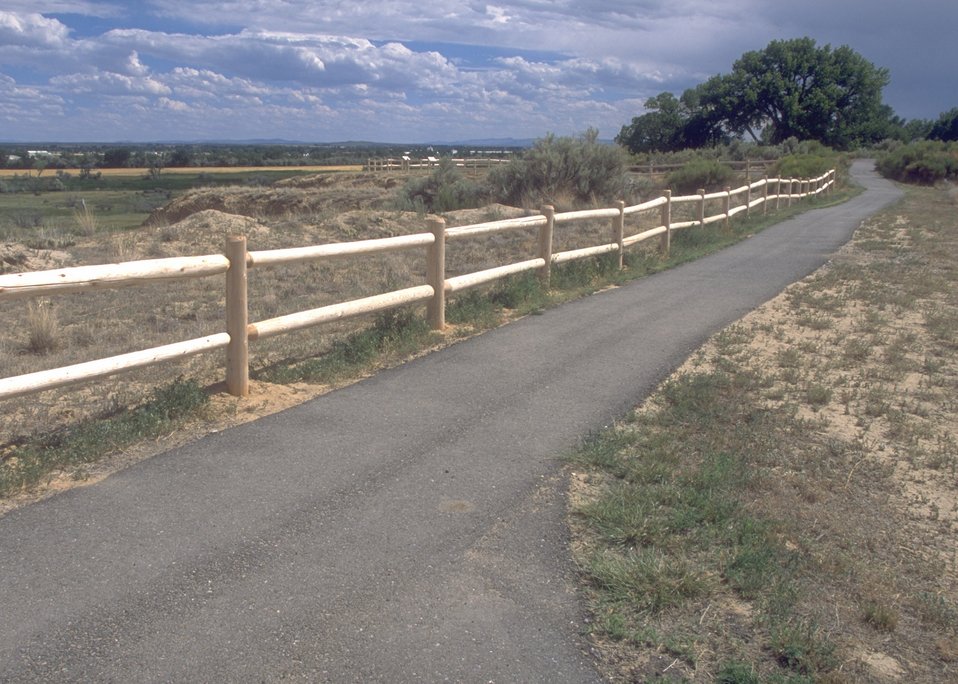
Duck Swamp Interpretive Area, Worland Field Office.